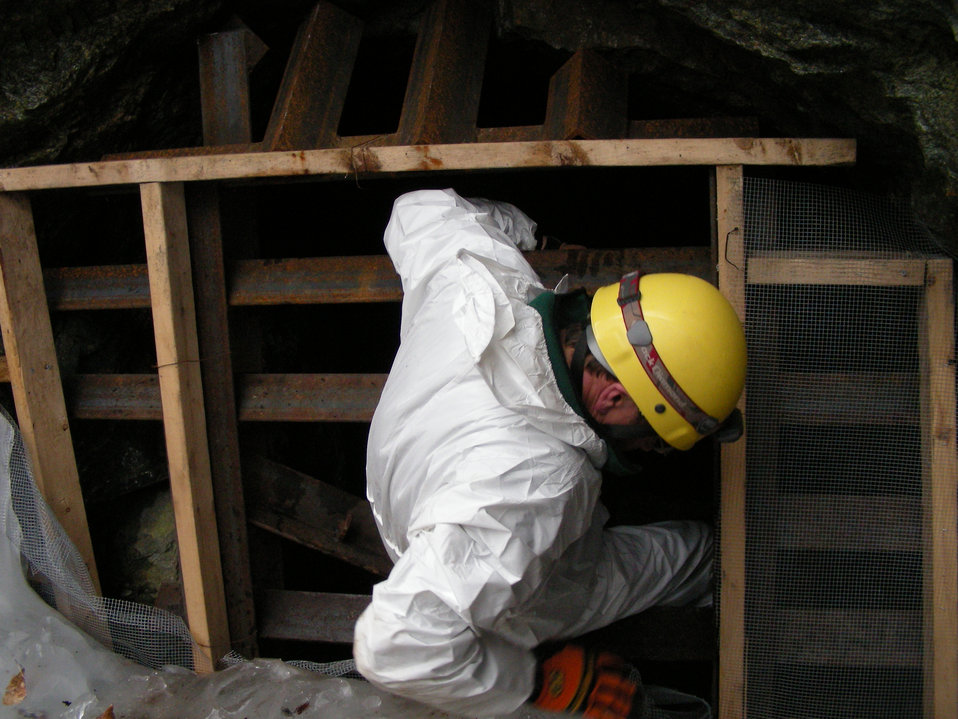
Biologist entering the mine

Service and State biologists enter Greeley Mine, Vermont, March 26, 2009.